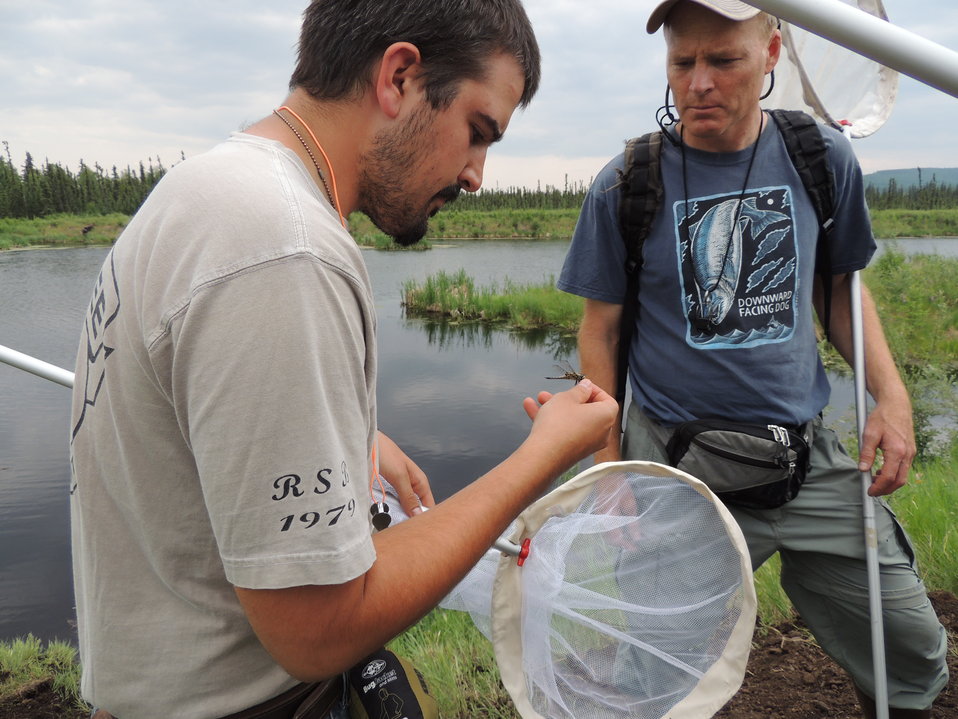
Dragonfly Day 2013

(USFWS)